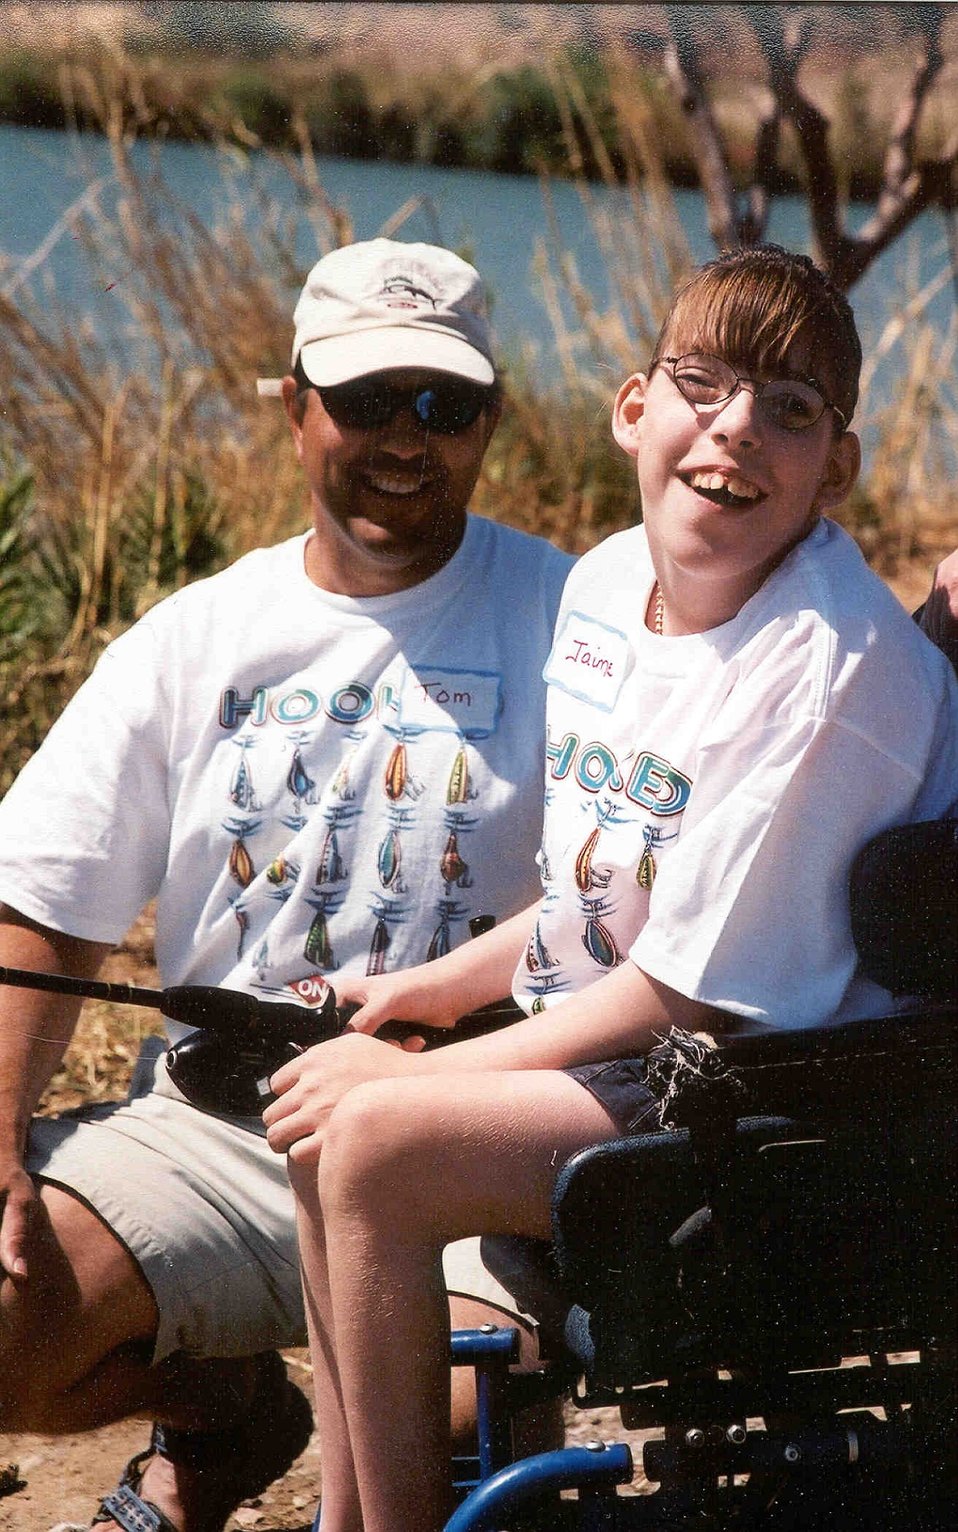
Mentally and physically challenged young person enjoying fishing in celebration of National Fishing and Boating Week.